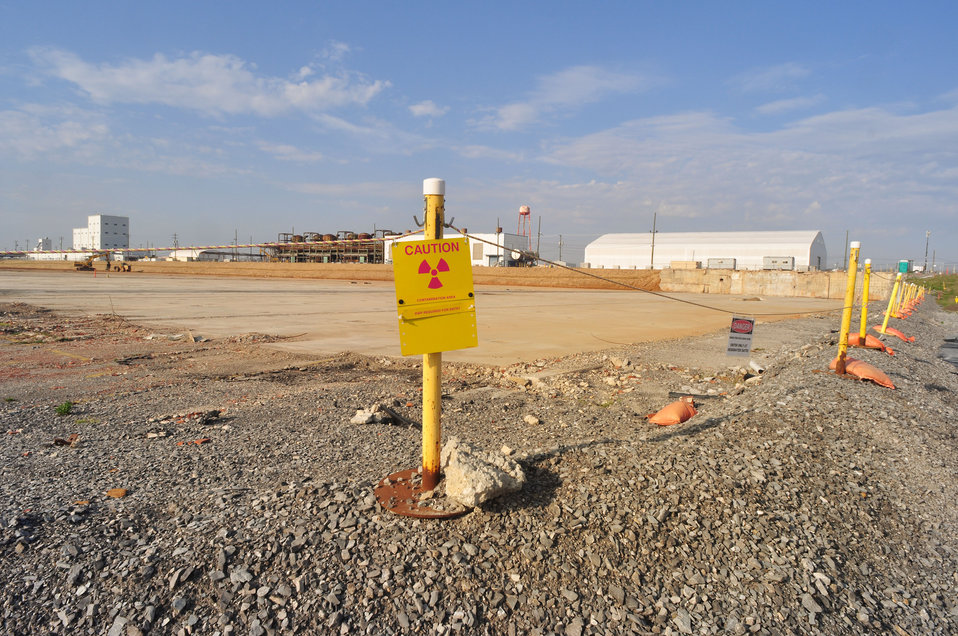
DandD work K-25 Oak Ridge

13-034 DOE photo Lynn Freeny 4-9-2013